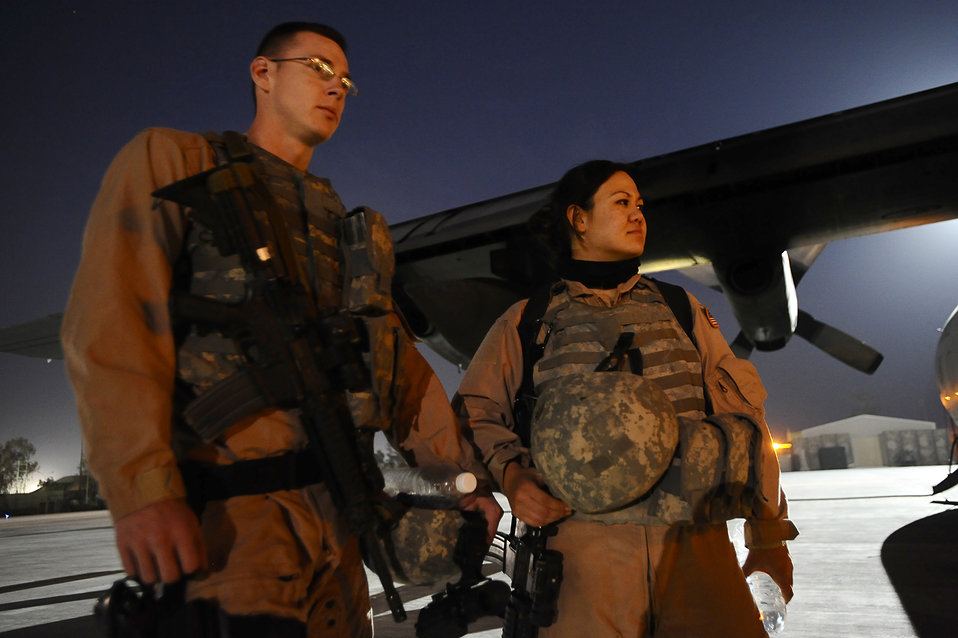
I'll fly away

Senior Airmen Matthew Rinehart and Rosie Munoz stand outside of a C-130 Hercules Dec. 31, 2008, at Joint Base Balad, Iraq. The Airmen serve as the aircraft's Fly Away Security Team, which provides ground security for the aircraft as it loads and unloads cargo at unsecured airfields. Airmen Rinehart and Munoz are deployed to the 332nd Expeditionary Security Forces Team from Andrews Air Force Base, Md. Airman Rinehart's hometown is York, Pa. Airman Munoz's hometown is El Paso, Texas.